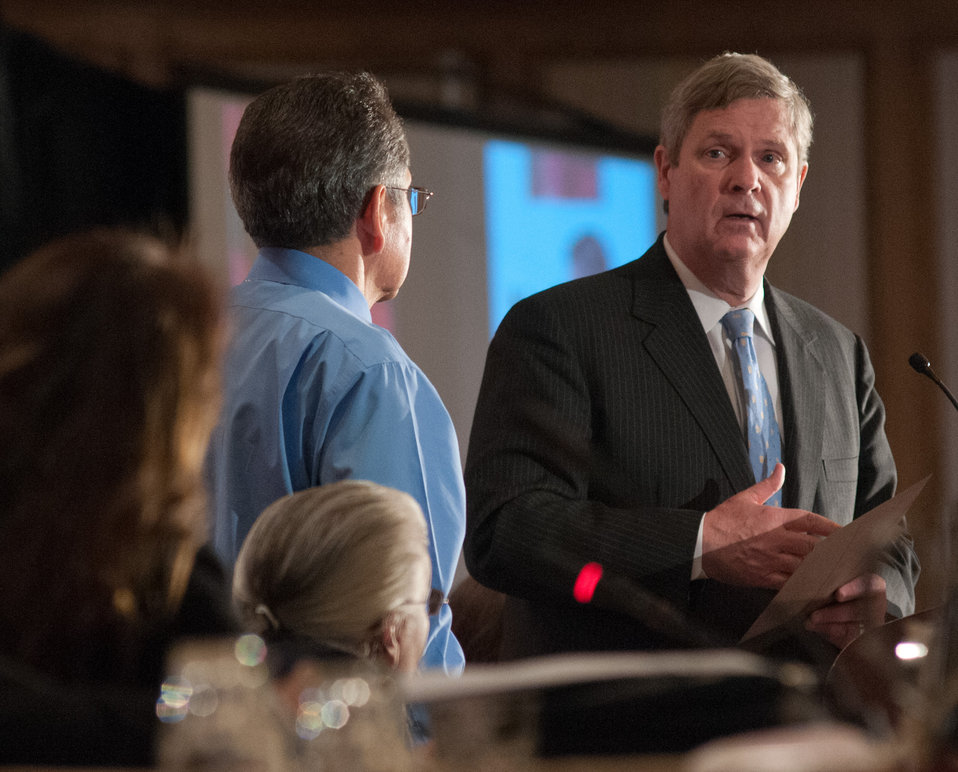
Agriculture Secretary Tom Vilsack listens to Affiliated Tribes of the Northwest Indians’ Fawn Sharp (far left) comment and invite teh Secetary to a future event, Agriculture Secretary Tom Vilsack listens to Affiliated Tribes of the Northwest Indians’ Fawn Sharp (far left) comment and invite the Secretary to a future event, at the National Congress of American Indians Tribal Nations Legislative Summit at L’Enfant Plaza Hotel in Washington, D.C., on Wednesday March 7, 2012. Secretary Vilsack has made improving relations with Native American Tribes a priority by creating the Office of Tribal Relations and directed all U.S. Department of Agriculture (USDA) agencies to be more aware of tribal issues and engage in tribal consultation and collaboration. Secretary Vilsack reiterated USDA’s support to Native American communities with financial support for electric, broadband and wastewater infrastructure, and providing families and businesses with home loans and business grants. Secretary Vilsack emphasized USDA’s participation in the First Lady’s Lets Move in Indian Country initiative to combat childhood obesity in tribal communities.